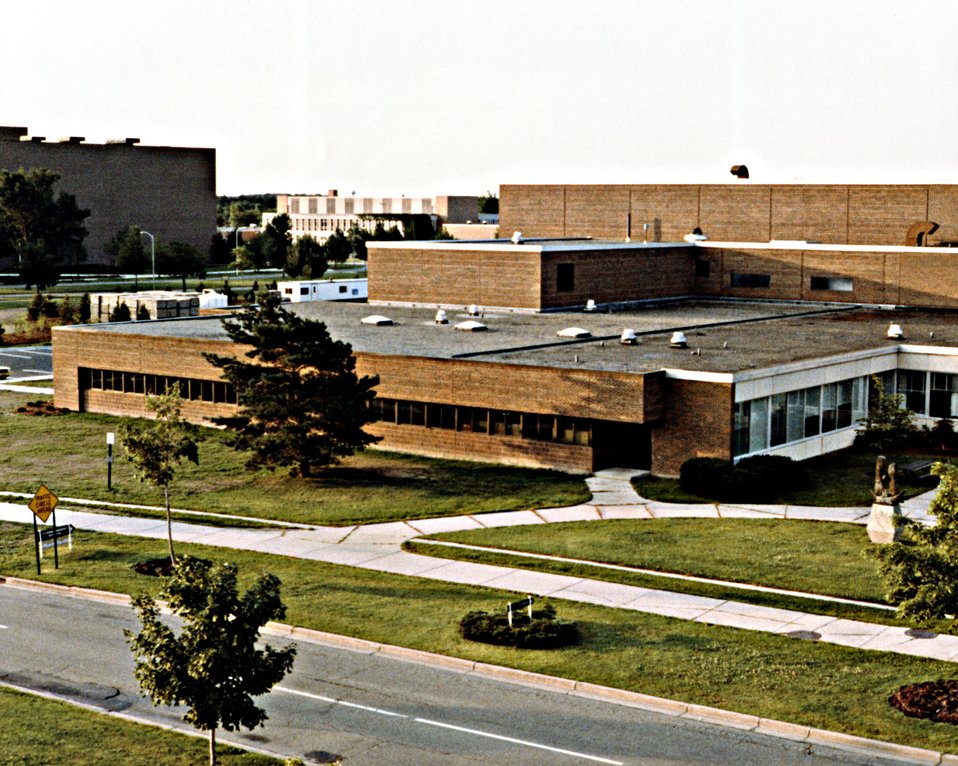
EAST WING OF THE LABORATORY, SHOWING THE OPEN OFFICE AREAS, THE MECHANICAL AREA, AND THE HIGH BAY.

THE NATIONAL SUPERCONDUCTING CYCLOTRON LABORATORY IS BEING CONSTRUCTED FOR DOE AT MICHIGAN STATE UNIVERSITY. THE FACILITY IS BASED ON A NEW KIND OF PARTICLE ACCELERATION, THE SUPERCONDUCTING CYCLOTRON, WHICH WILL BE USED TO STUDY THE NUCLEAR REACTIONS BETWEEN 'HEAVY IONS'. USING ULTRA- COLD, SUPERCONDUCTING TECHNOLOGY FOR THE POWER COILS HAS RESULTED IN A COMPACT CYCLOTRON WITH A UNIQUELY HIGH ENERGY GAIN. THE LABORATORY IS AN EXTENSION OF AN EXISTING FACILITY AND WILL PROVIDE A SECOND-STEP SUPERCONDUCTING CYCLOTRON AND ADDITIONAL EXPERIMENTAL AREAS, BEAM TRANSPORT SYSTEMS, RADIATION SHIELDING, AND SUPPORT AREAS.